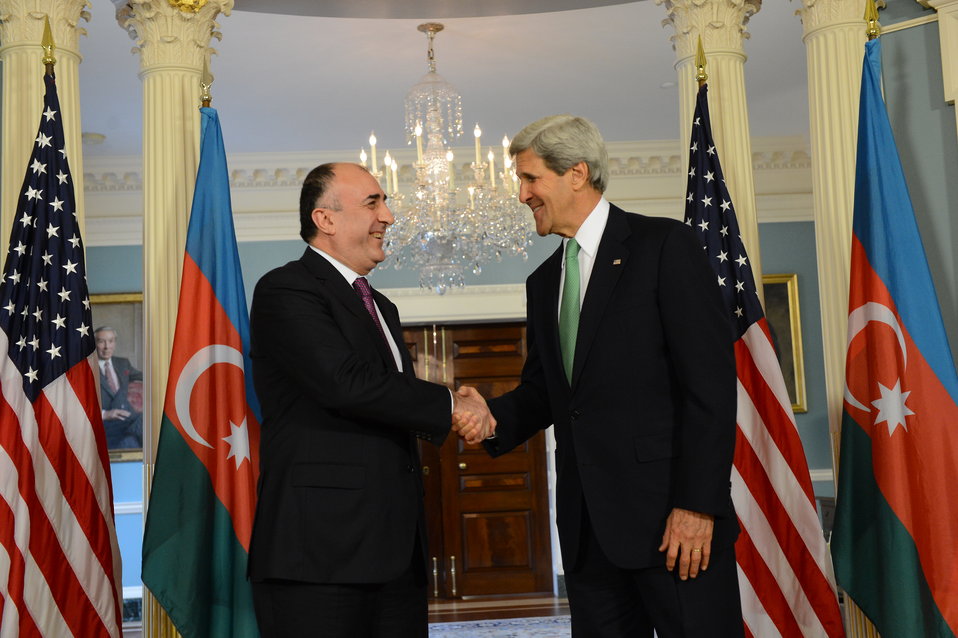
Secretary Kerry Delivers Remarks With Azerbaijani Foreign Minister Mammadyarov

U.S. Secretary of State John Kerry delivers remarks with Azerbaijani Foreign Minister Elmar Mammadyarov at the U.S. Department of State in Washington, D.C., on June 3, 2013.